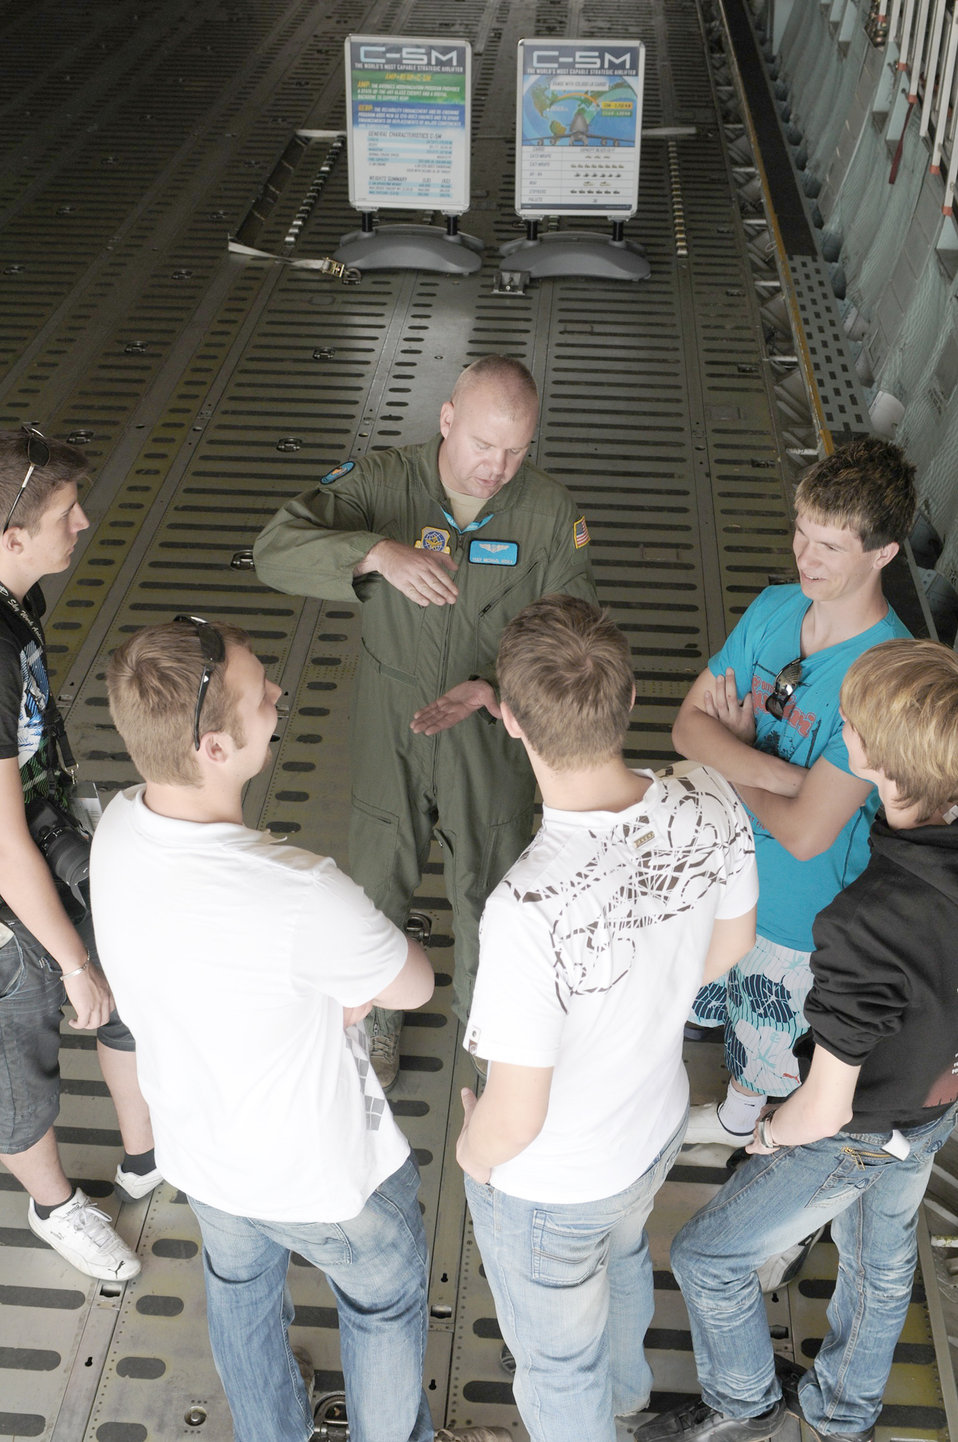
U.S. military participates in Berlin air show

Tech. Sgt. Michael Miska answers questions from visitors during the 2010 Berlin International Aerospace Exhibition and Conferences Air Show June 8 at Berlin-Schoenefeld Airport in Berlin. Sergeant Miska is a 9th Airlift Squadron loadmaster from Dover Air Force Base, Del.